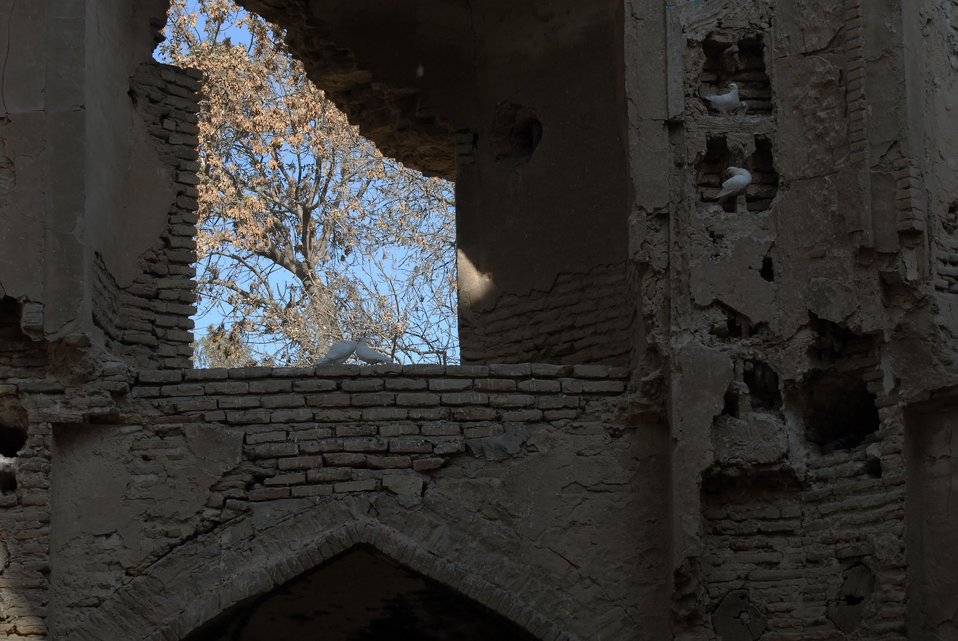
'On the Road' in Balkh Province